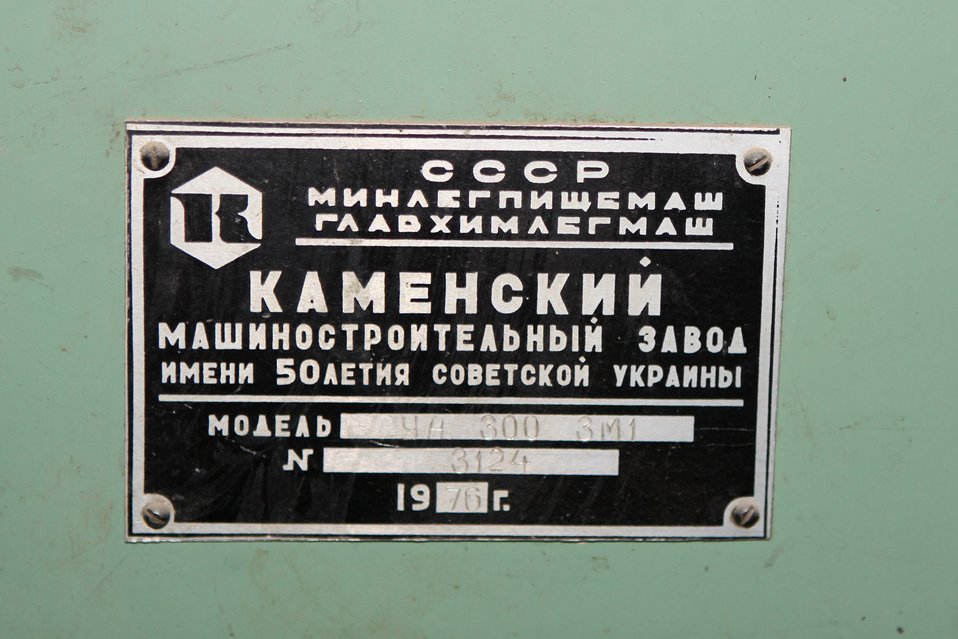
100525 Hirat Textile Company 734